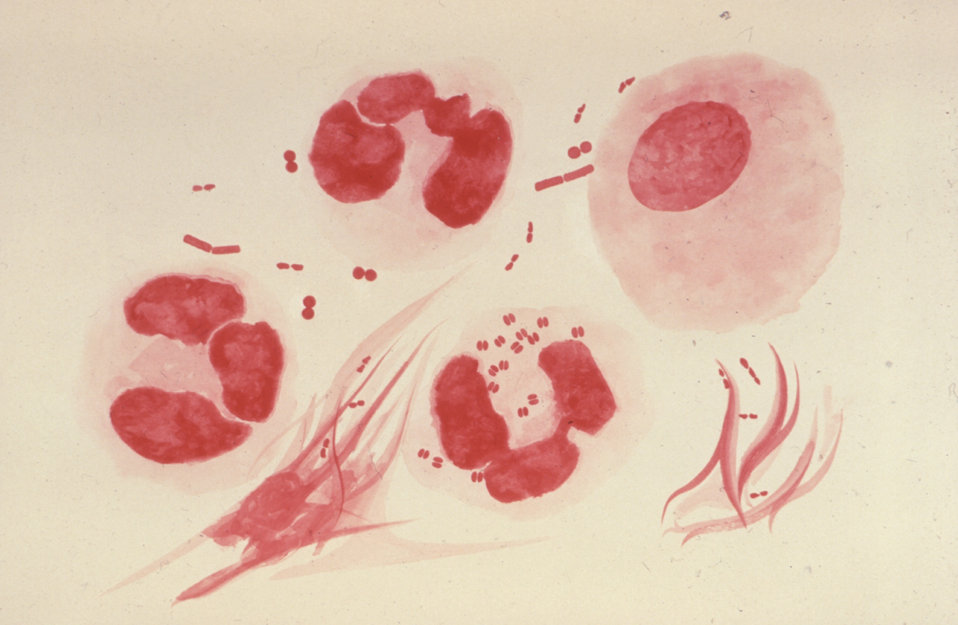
This illustration depicts a urethral exudate containing Neisseria gonorrhoeae from a patient with gonococcal urethritis.